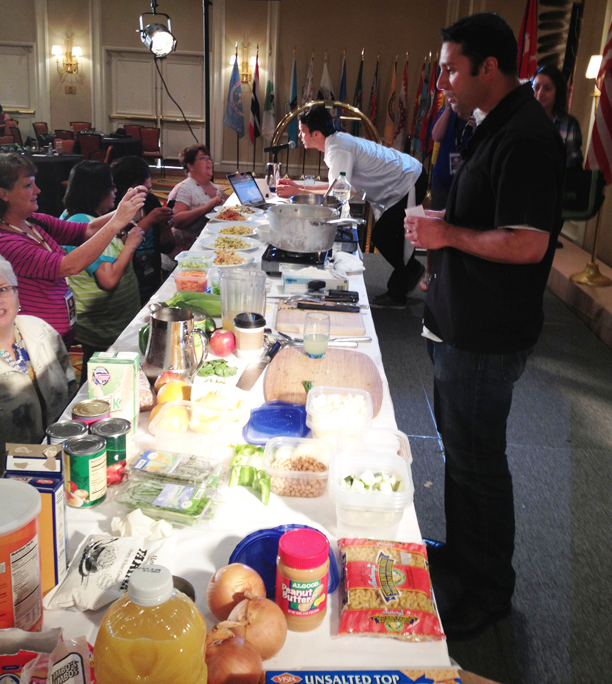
FDPIR-Conf.-Spread-Web2

The live cooking demo by Tocabe included several creative meals using U.S. Department of Agriculture (USDA) supplied foods.